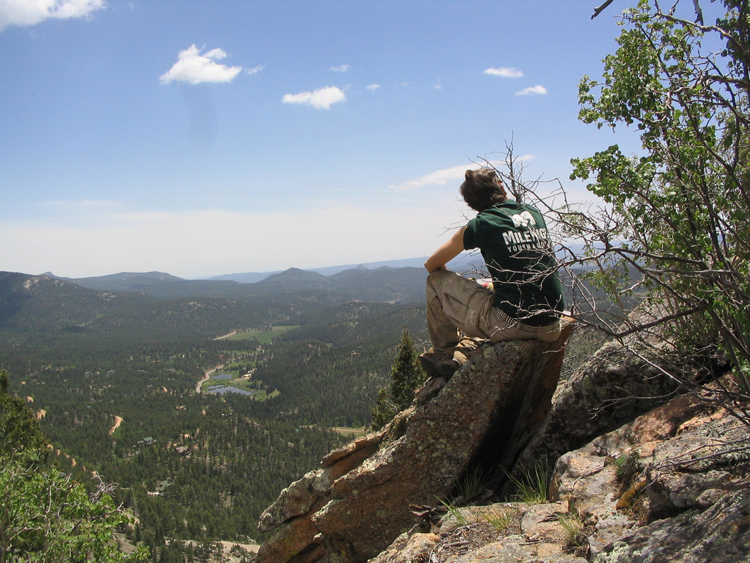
Uploaded by request of Anna Black

Taken in Staunton State Park, near Denver, CO

A Crewleader of Mile High Youth Corps enjoys the Rocky Mountain view during her lunch break from a trail maintenance service project at Staunton State Park near Denver, CO. Through paid work experience, service to the community and educational activities, Mile High Youth Corps helps youth develop the skills they need to succeed in the classroom, the workforce and everyday life. In 2007, 275 youth gave 41,000 hours of service to the Denver community and completed over 14 miles of trail work throughout the greater-metro area, in addition to many other accomplishments.